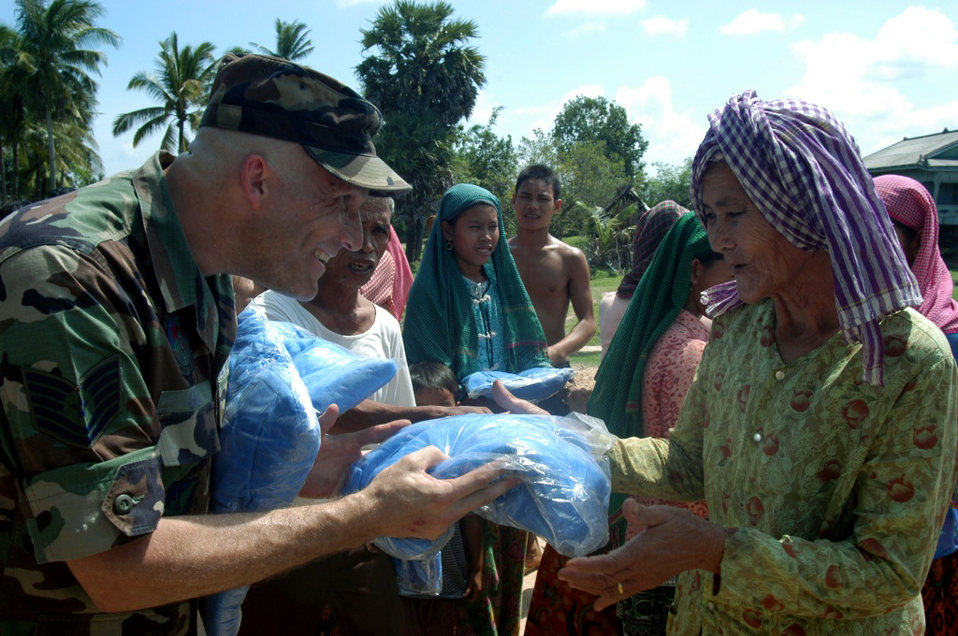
Gift of health

KEP, Cambodia -- Tech. Sgt. Bryan Gray hands out mosquito nets to a Cham-Muslim woman in a village near here May 20. He is part of a 20-person blast resuscitation and victim assistance team on a two-week humanitarian mission. Members of the team are passing out 1,000 mosquito nets to cut down on malaria. Sergeant Gray is a biomedical equipment repair technician with the 18th Medical Support Squadron at Kadena Air Base, Japan.